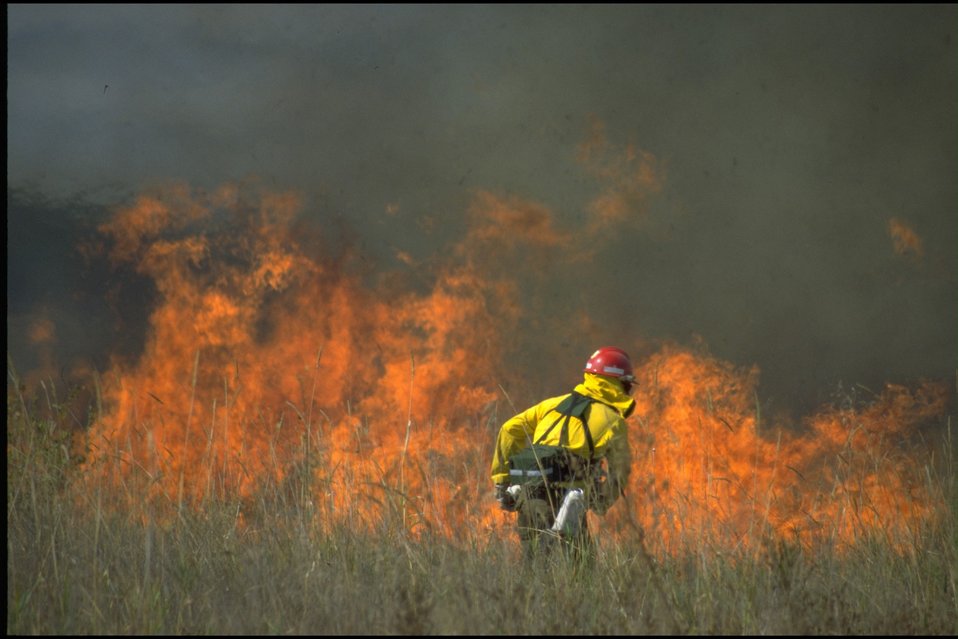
Spectra Physics Burn - Wetlands.